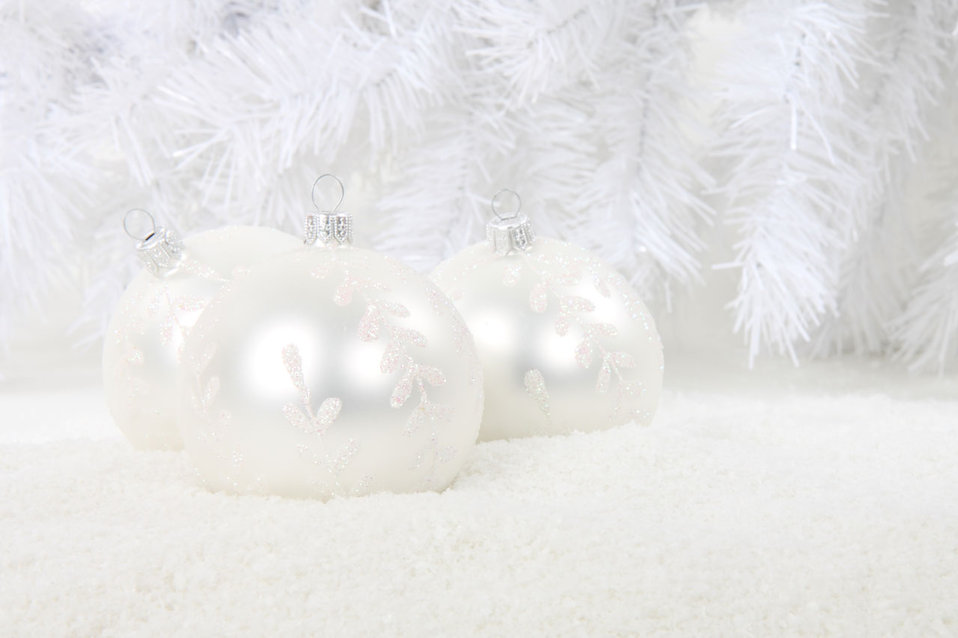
White christmas baubles in snow with white christmas tree in the background.